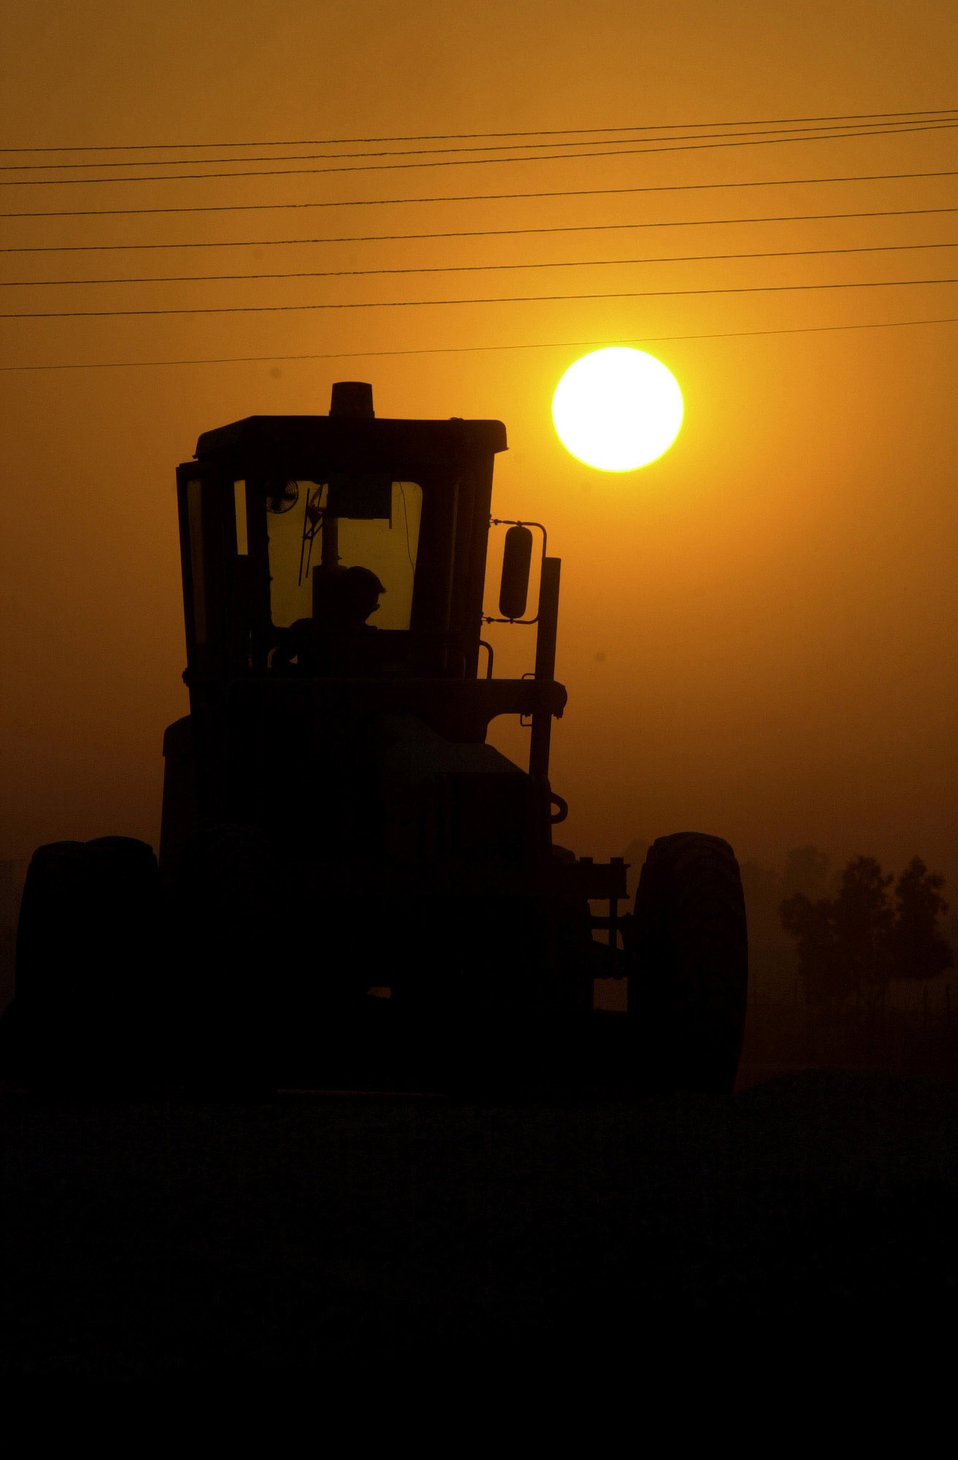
Red Horse rider

OPERATION ENDURING FREEDOM -- As the sun sets, Staff Sgt. Benjamin Pelky, a heavy equipment operator from the 823rd RED HORSE Squadron at Hurlburt Field, Fla., rides off after putting the finishing touches on the base of what soon will be another tent city built for troops deployed at an operating location in support of Operation Enduring Freedom.